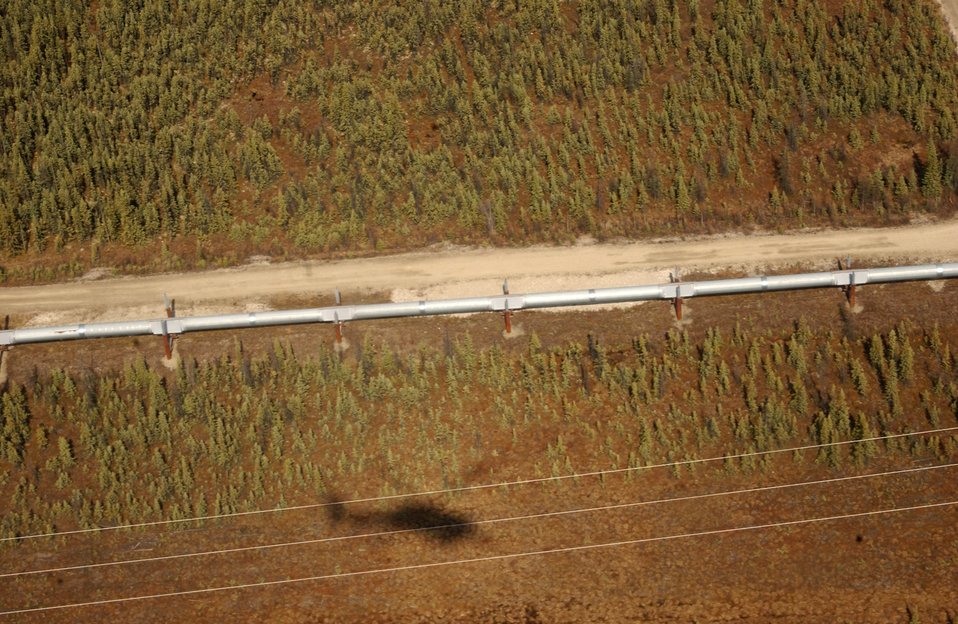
Keeping an eye on gas

The Trans-Alaska Pipeline System is being scanned for suspicious activity by an aircrew on board an HH-60G Pave Hawk during Northern Edge May 10. The TAPS runs north to south, almost 800 miles from Prudhoe Bay to Valdez. During this exercise, Airmen from the 210th Rescue Squadron patrolled from Livengood to Delta covering 172 miles. The HH-60 Pave Hawk is assigned to the 210th RSQ at Eielson Air Force Base, Alaska.